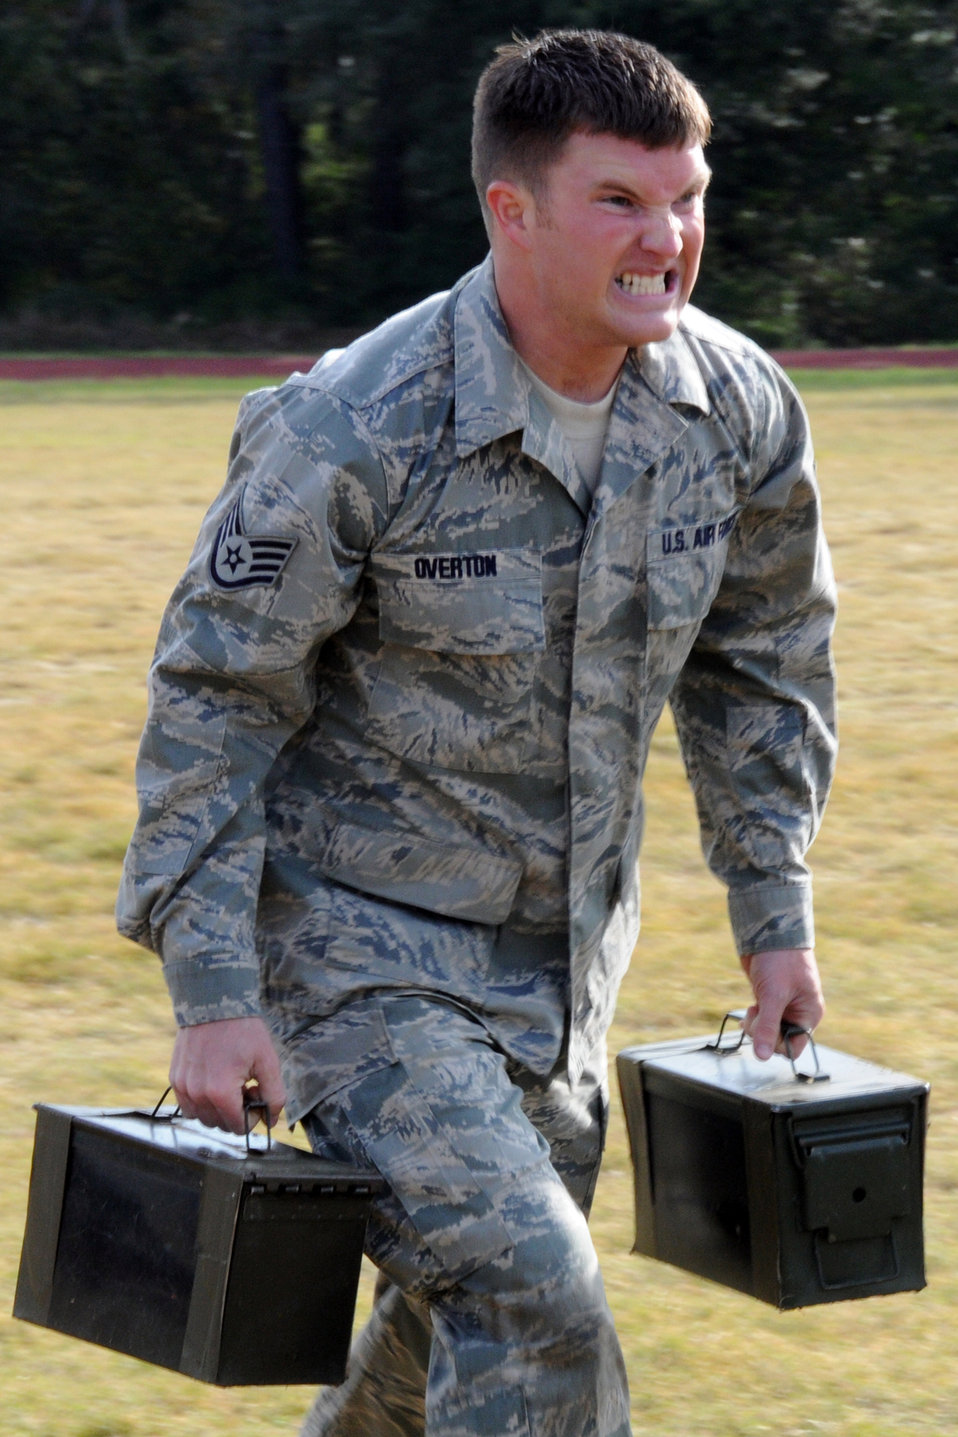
Eglin Airmen join Marines in combat fitness test

Staff Sgt. William Overton grinds out the last 50 feet of the 300-yard maneuver under fire course while carrying two 30-pound ammo cans as part of the Marine combat fitness test Nov. 25, 2009, at Eglin Air Force Base, Fla. Sergeant Overton is assigned to the 96th Logistics Readiness Squadron. Airmen across the base participated in the test alongside Marines from the 33rd Fighter Wing.